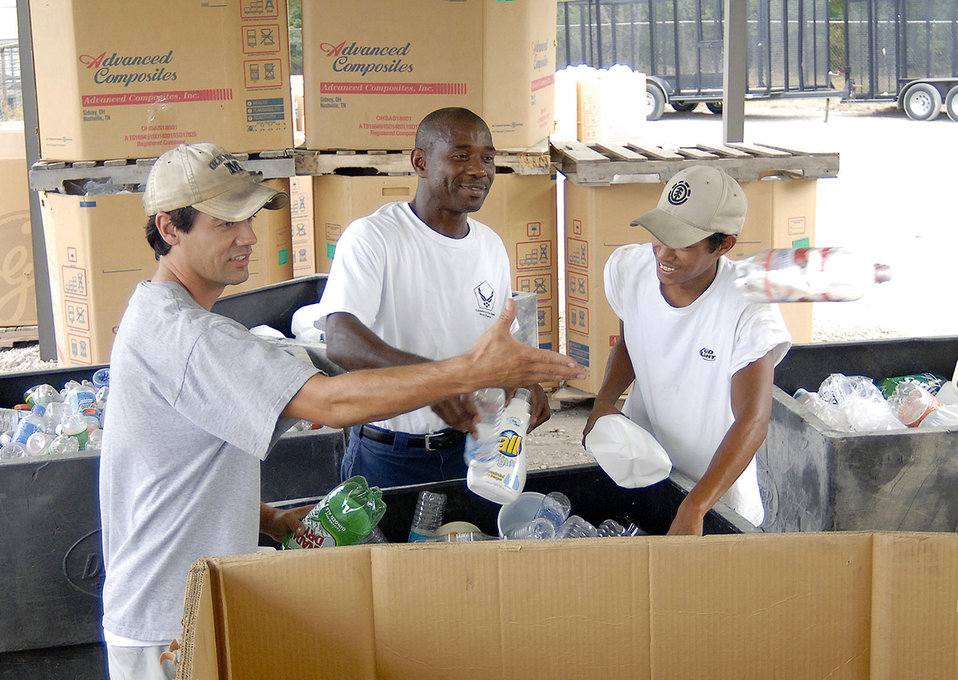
Columbus AFB earns state recycling award

Recycling center employees Bradley Harris, Felix Davis and J.R. Fiske sort through plastic at the Columbus Air Force Base, Miss., recycling center on July 17. The center recycled more than 1,520 tons and composted 32 tons of material in 2005. The Mississippi Recycling Coalition named the base as the Federal Government Recycler of the Year for the third consecutive year.